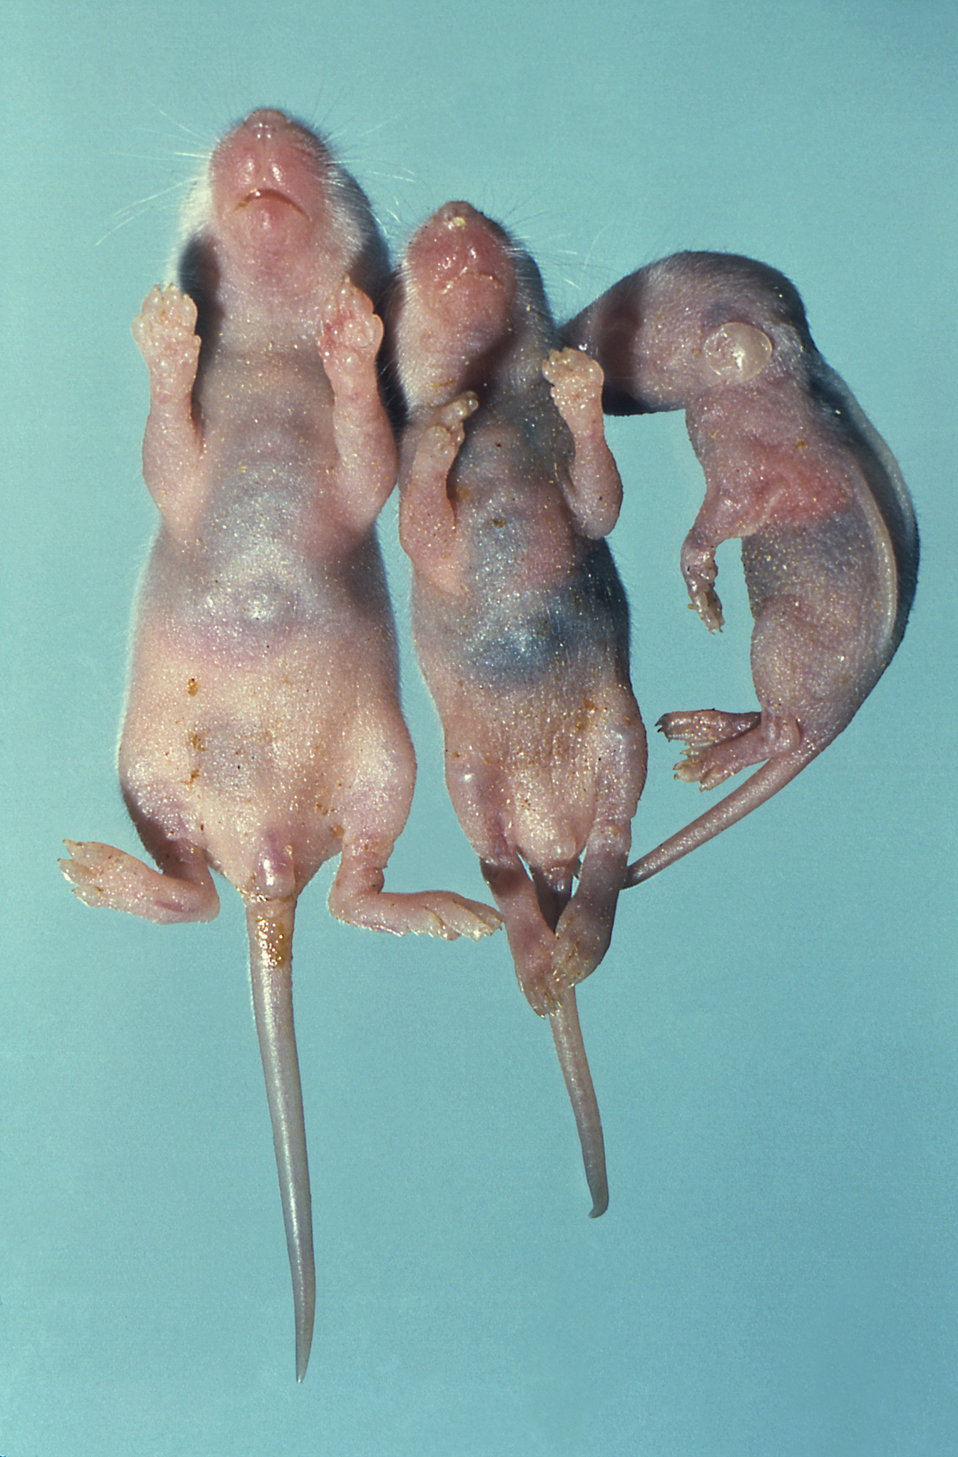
This image depicts three infant mice that had succumbed to the pathogenic effects of the mouse hepatitis coronavirus (MHV), which was formerly known as the lethal intestinal virus of infant mice (LIVIM).